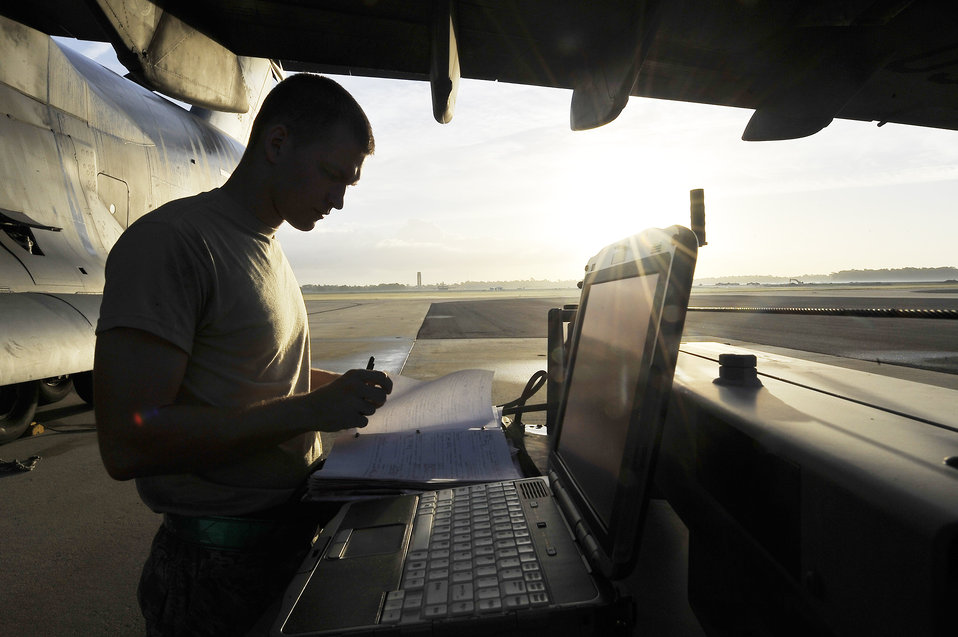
Let's review

Airman 1st Class Todd Elkins looks up information in an aircraft maintenance records binder on the Charleston Air Force Base, S.C., flightline Oct. 23, 2009. Maintenance technicians at Charleston AFB work around the clock every day to keep the base's fleet of C-17 Globemaster IIIs flying. Airman Elkins is an electrical and environmental systems journeyman with the 437th Aircraft Maintenance Squadron.